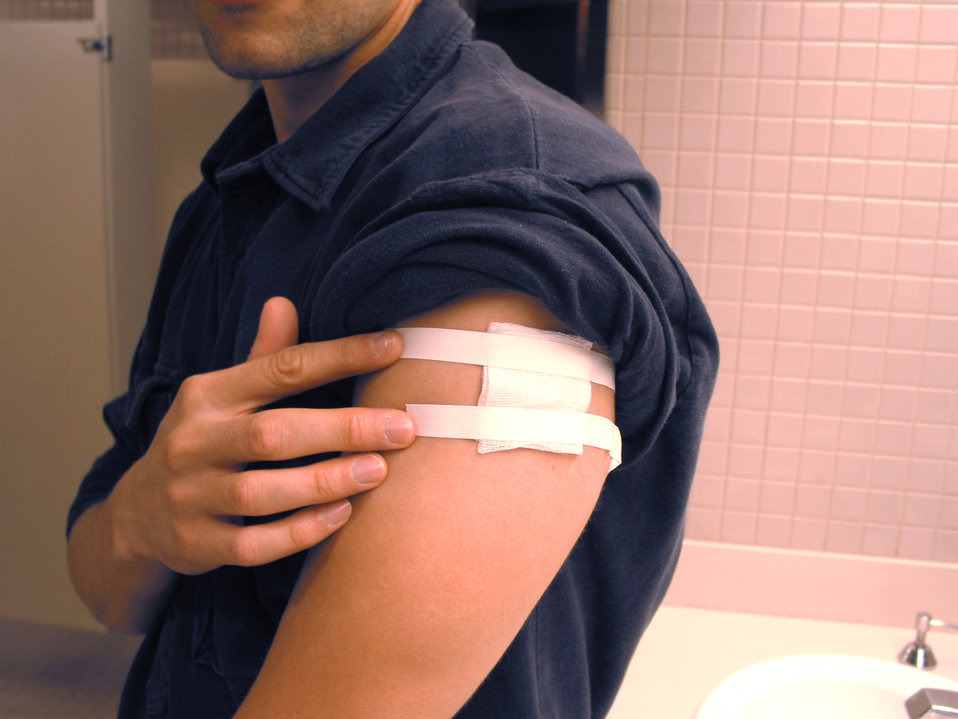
This demonstrates how a smallpox vaccinee covers a vaccination site with a gauze bandage and medical tape after taking a shower.